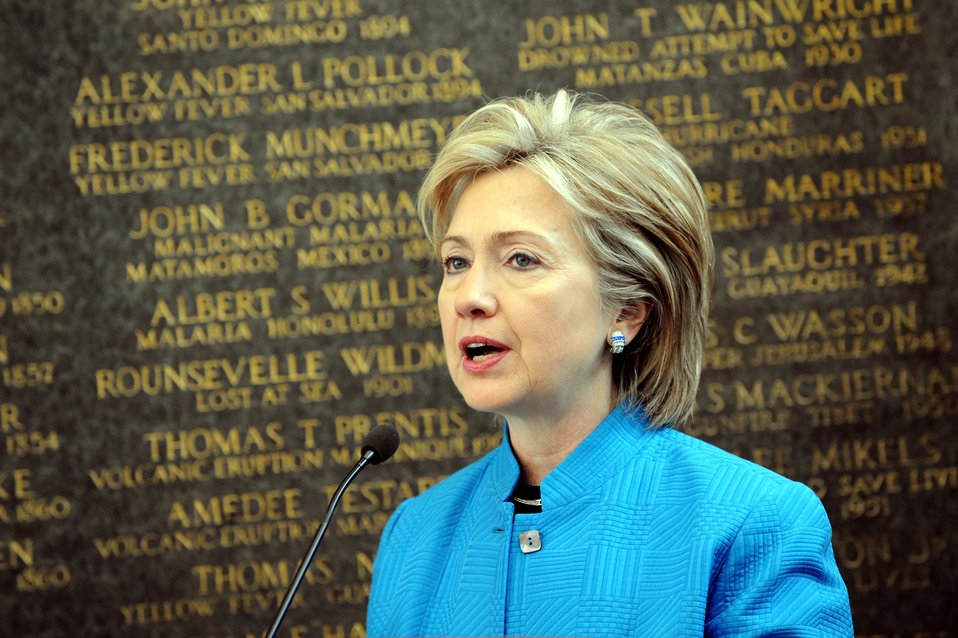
Secretary Clinton on Foreign Affairs Day

U.S. Secretary of State Hillary Rodham Clinton delivers the keynote address of the Town Hall Meeting at Plenary Session of Foreign Affairs Day in the Dean Acheson Auditorium of the U.S. Department of State in Washington, DC May 1, 2009.